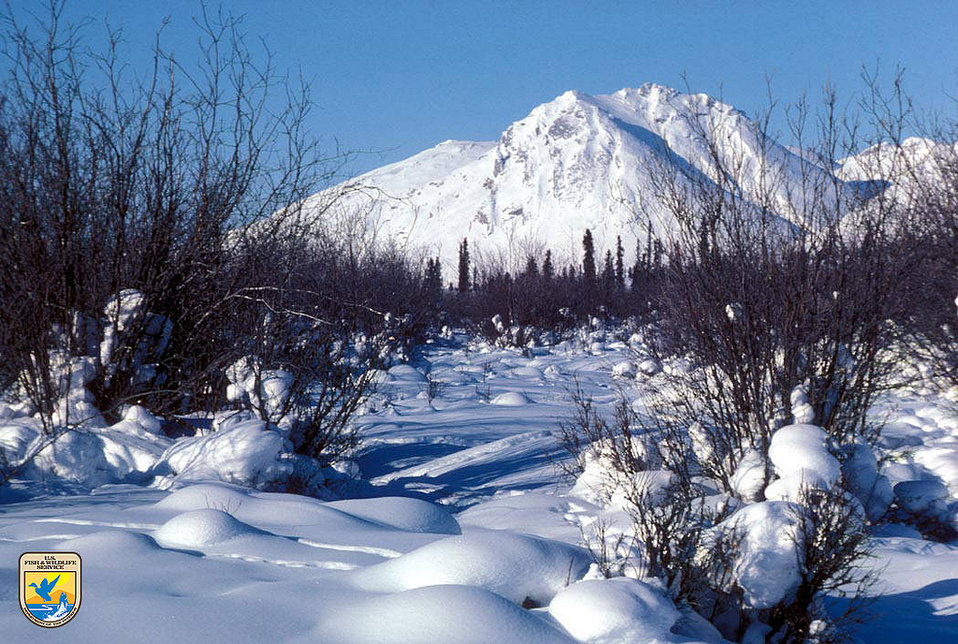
Arctic Refuge

The refuge in winter.